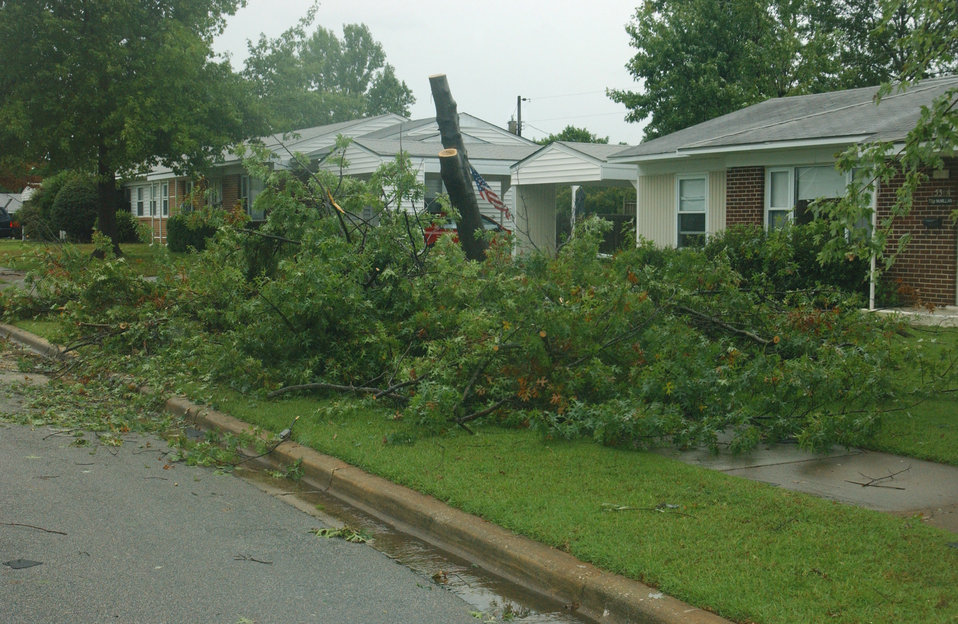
Tornado blows through Shaw

SHAW AIR FORCE BASE, S.C. -- Damaged trees sit in front of a housing unit here following a tornado with winds at about 103 mph that touched down Sept. 7. The tornado damaged homes, power lines, trees and vehicles here. Multiple tornados stemming from Hurricane Frances touched down throughout the state. No one on base was injured.